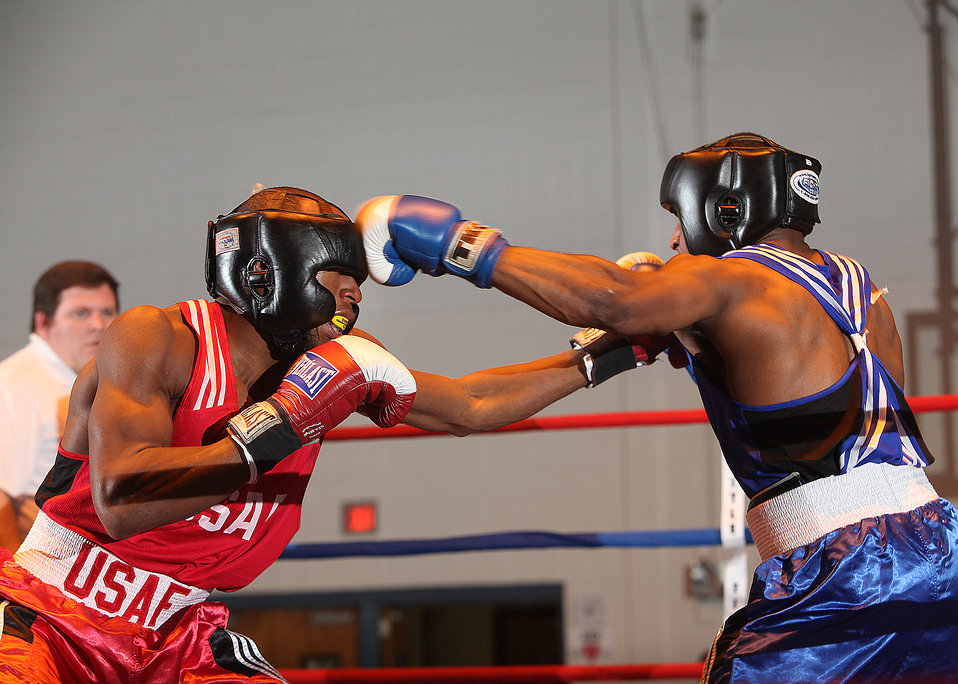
Knock out!

Air Force welterweights Daniel Logan (left) and James Beck compete during the Air Force Box-off tournament Jan. 22, 2011, at Lackland Air Force Base, Texas.